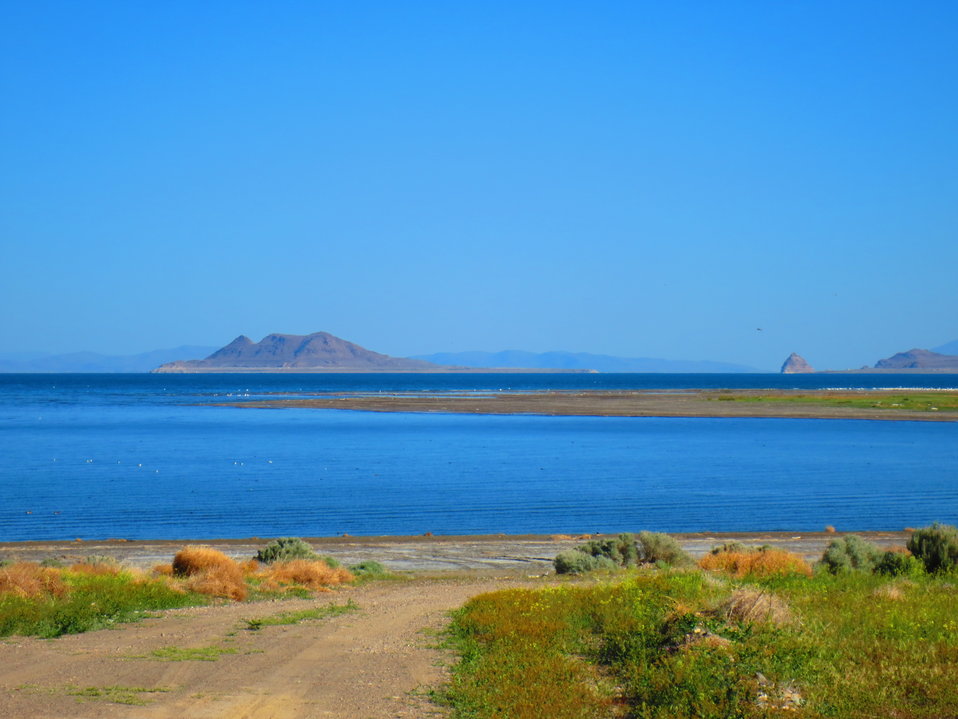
Anaho Island NWR and Pyramid Lake

View of Anaho Island and Pyramid Lake, Nev.